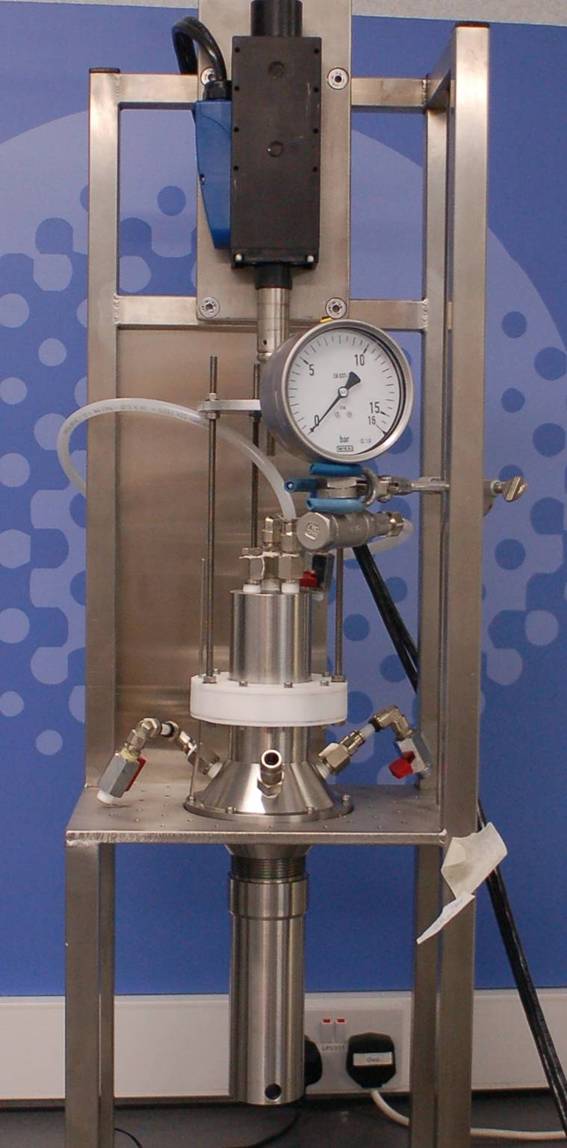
100-bar OBR hydrogenator